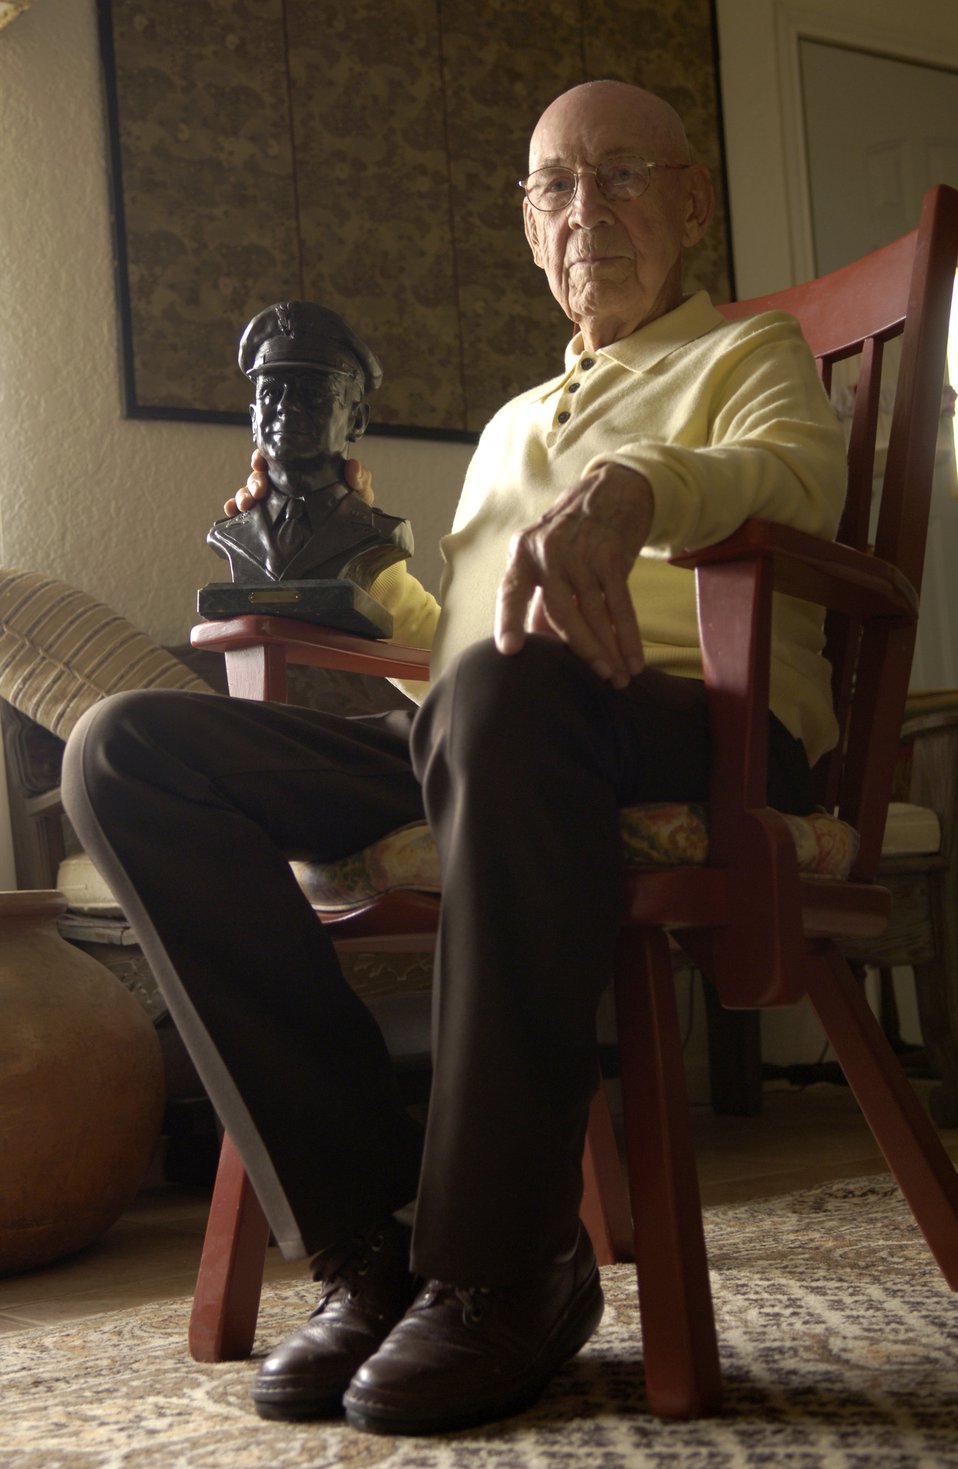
Doolittle Raider remembers historic mission over Japan

Retired Lt. Col. Dick Cole, now 90 years old, was one of 80 men, led by then Lt. Col. James Doolittle, who volunteered to bomb mainland Japan on April 18, 1942. Colonels Cole and Doolittle were the pilots of the first of 16 B-25 Mitchell medium bombers that launched from the USS Hornet, floating approximately 500 miles from Japan's coast. The mission was the first American strike on the Japanese mainland. Only 16 of the original 80 men remain alive today.